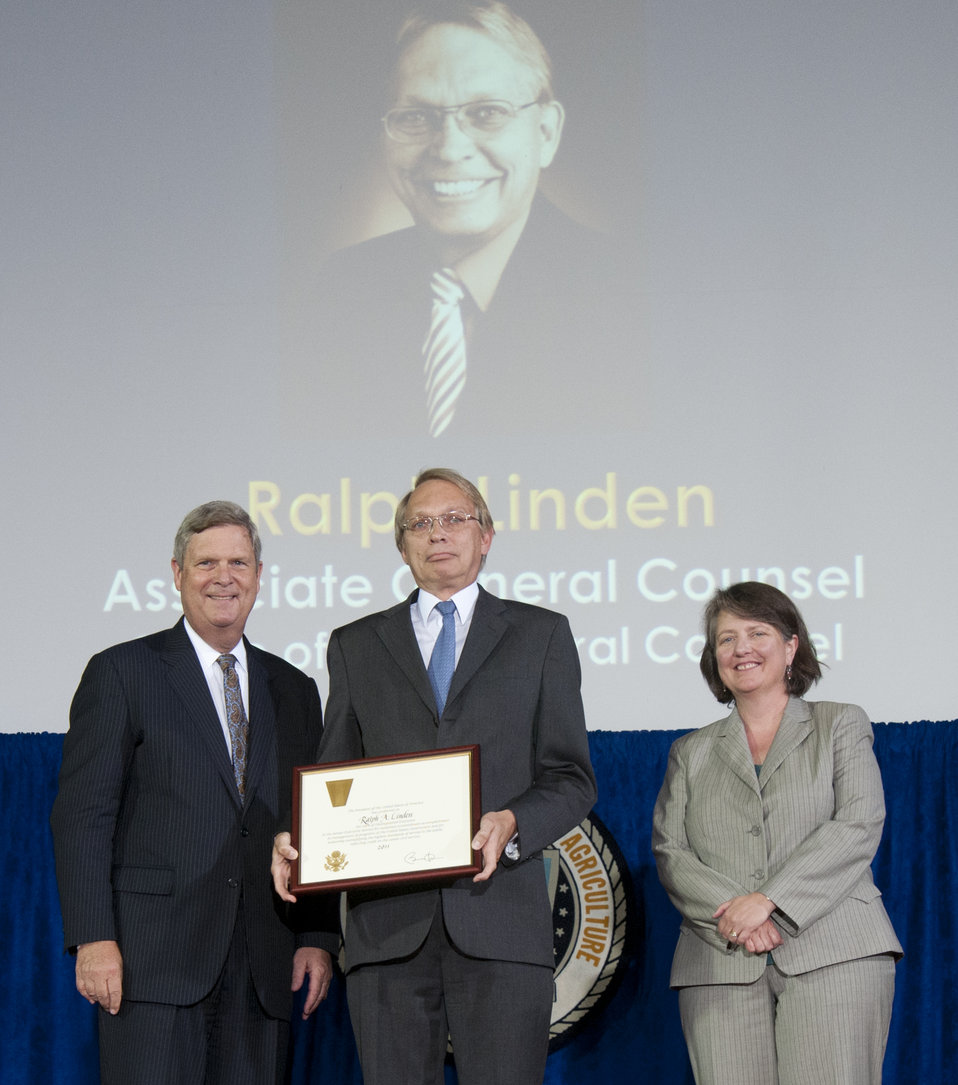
Agriculture Secretary Tom Vilsack and Agriculture Deputy Secretary Kathleen Merrigan present the Presidential Rank Award to Office of the General Counsel (OGC) Associate General Counsel Ralph Linden at the U.S. Department of Agriculture (USDA) 64th Annual Honor Awards Ceremony in Washington, D.C. on Wednesday, Sept. 12, 2012. Presidential Rank Award Winners in the Senior Executive Service receive this award for sustained extraordinary accomplishment in management of programs of the U.S. Government and for leadership exemplifying the highest standards of service to the public, reflecting credit on the career civil service.